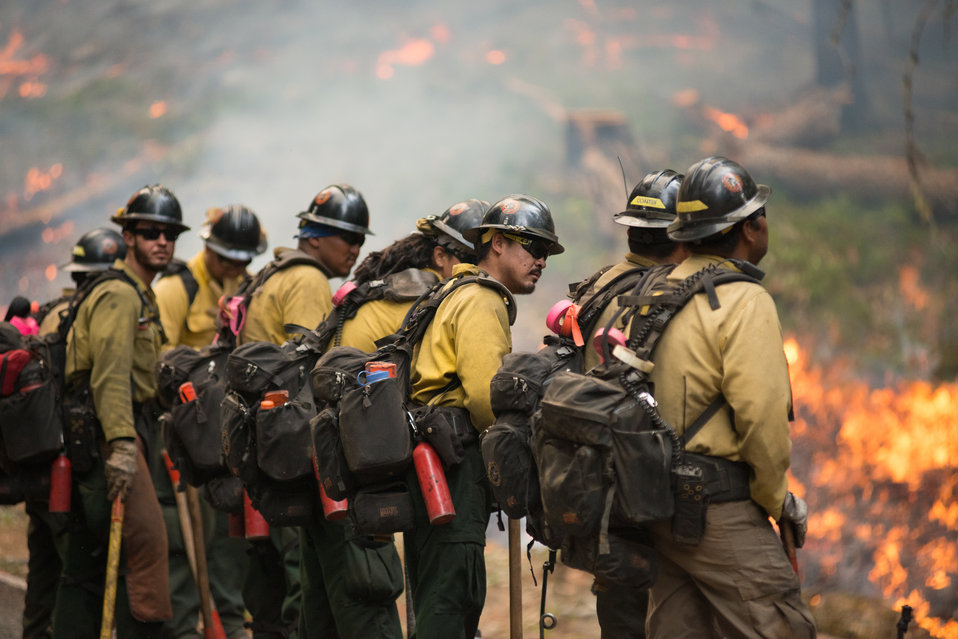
Geronimo Interagency Hotshot Crew, Department of the Interior (DOI) Indian Affairs (IA) Bureau of Indian Affairs (BIA) San Carlos Agency in Arizona; on assignment at the Big Windy Complex Wildlands Fire, approximately 15 miles west of Interstate-5 and East Northeast of Galice, Oregon, conducts a prescribed burn 'burnout' operation to help stop the main fire that may head toward this roadway, on Friday, Aug 9, 2013. The primary mission of the Interagency Hotshot Crews (IHC) is to provide a safe, organized, mobile and highly skilled hand crew for all phases of wildland fire suppression. The arduous duties and specialized assignments required of IHC personnel require uniform staffing, certification, training, equipment, communications, transportation, organization, and qualifications that adhere to interagency standards and guidelines.